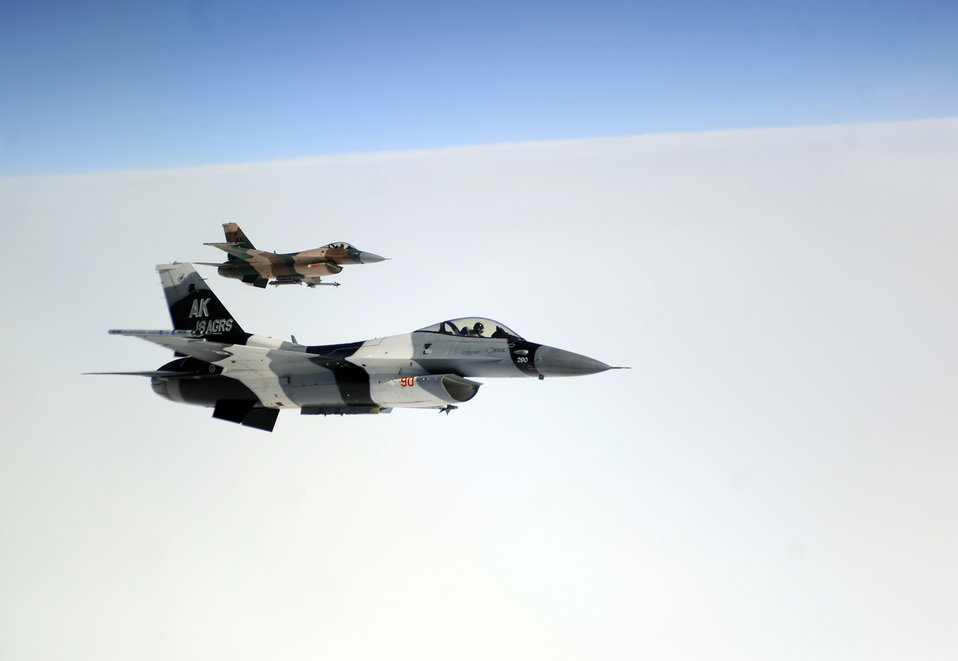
On the prowl

Two F-16 Aggressors fly in formation Aug. 10, 2010, over Eielson Air Force Base, Alaska. The F-16s are playing the role of hostile forces in a series of mock combat scenarios as part of Red Flag-Alaska. The F-16s are assigned to the 18th Aggressor Squadron with the 354th Fighter Wing.